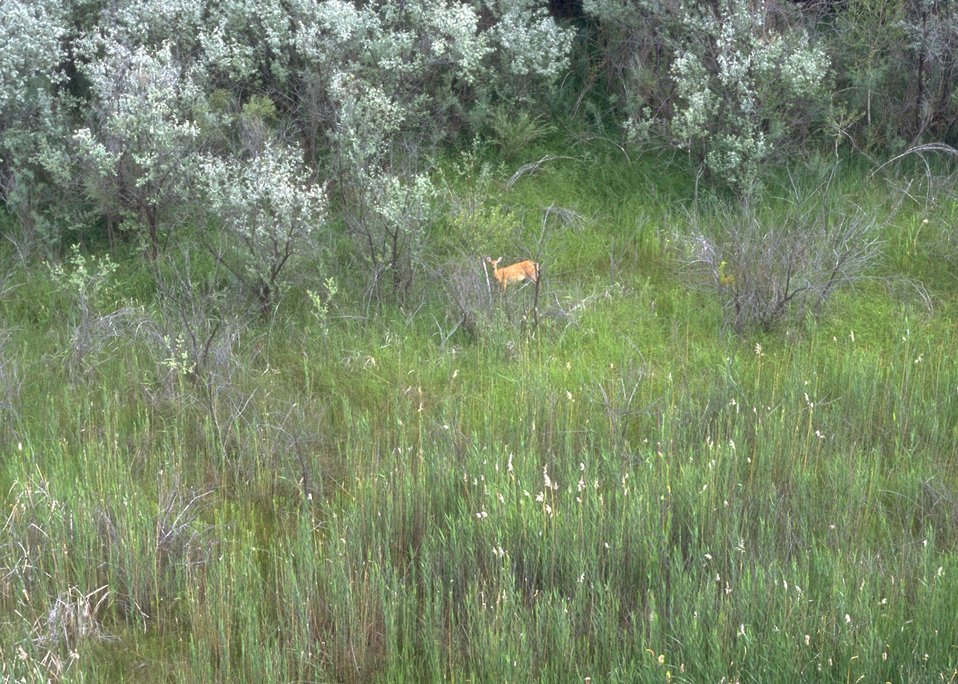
Duck Swamp Interpretive Area, Worland Field Office.